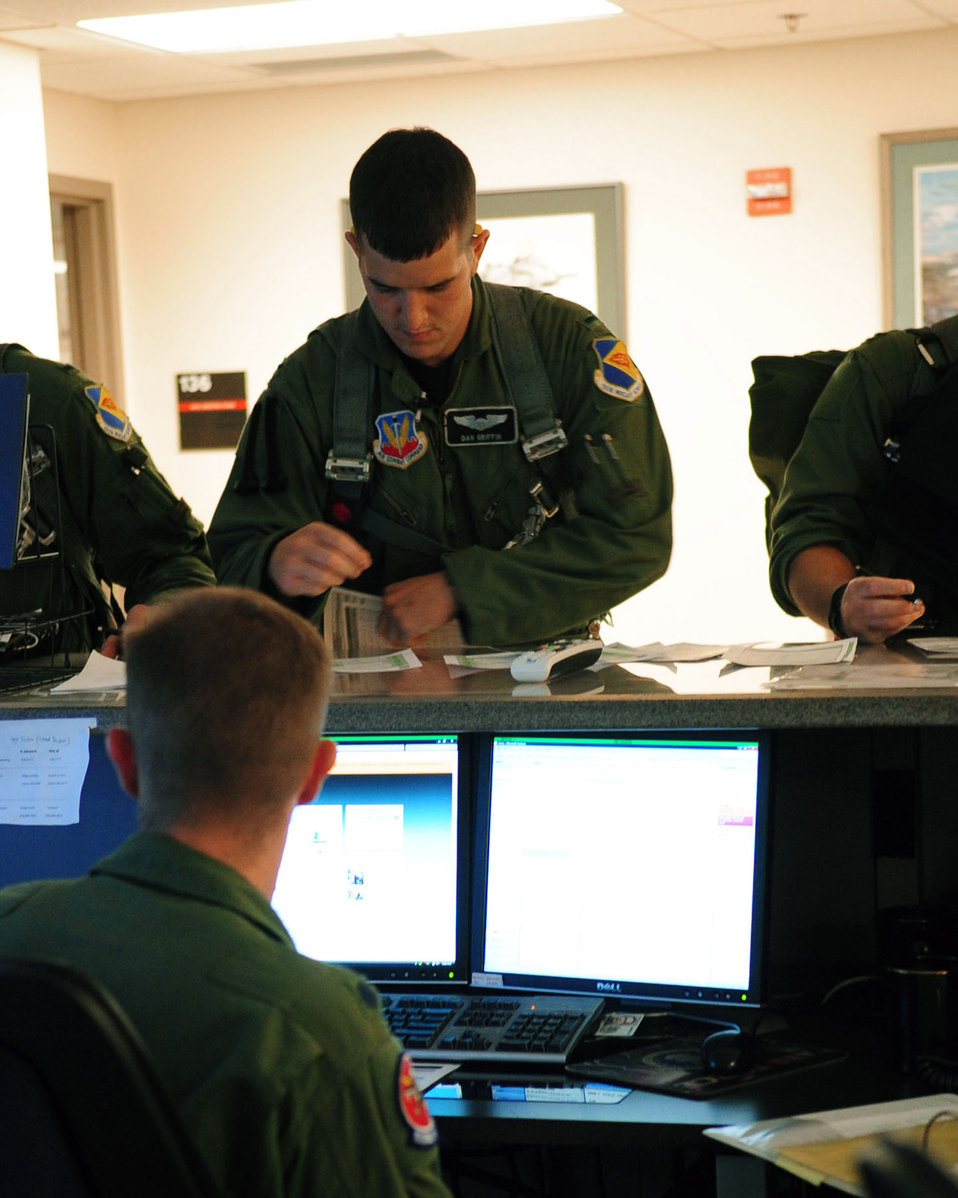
A-10 qualification

1st Lt. Dan Griffin, a pilot from the 358th Fighter Squadron at Davis-Monthan Air Force Base, Ariz., looks over his pre-flight checklists June 23, 2010, just before stepping out to the flight line. He was preparing for the second of eight night flights. As part of the A-10C Pilot Initial Qualification course curriculum, he must learn to execute night flying missions using night vision goggles. He'll accomplish this over the next few weeks through six hours of academic classes, five hours in the A-10 flight simulator and eight training flights.